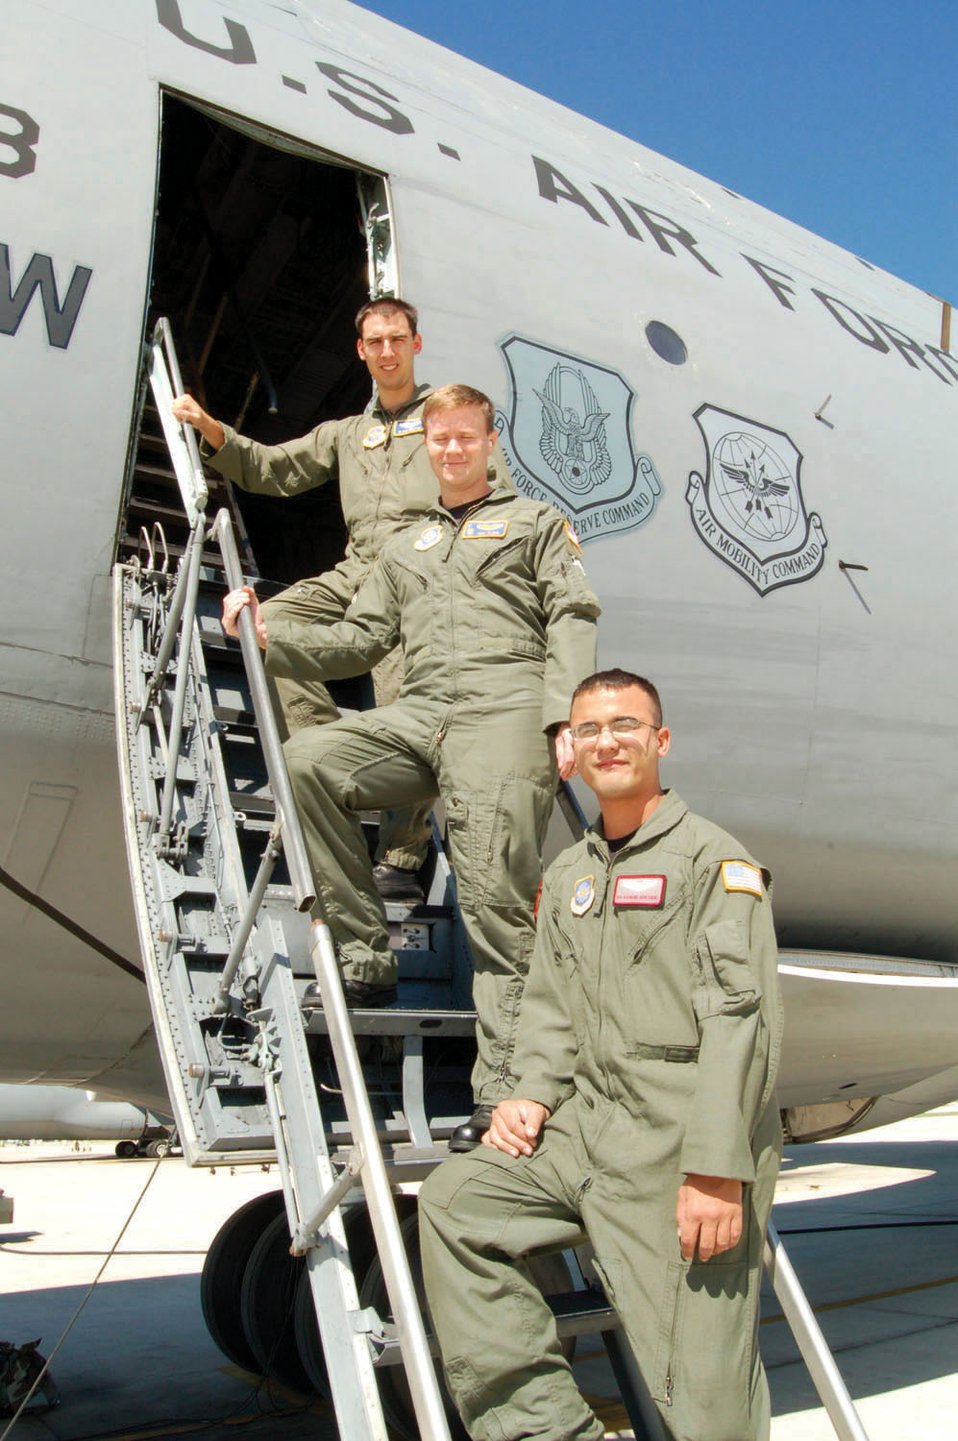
3 graduate from new C-5 schoolhouse at Lackland

From the top, 1st Lt. Blair Preston, 2nd Lt. Paul Sloan and Senior Airman Raymond Montanino are the first to graduate from the new C-5 Formal Training Unit Complex at Lackland Air Force Base, Texas. Lieutenant Preston and Sloan are pilots, and Airman Montanino is a flight engineer.